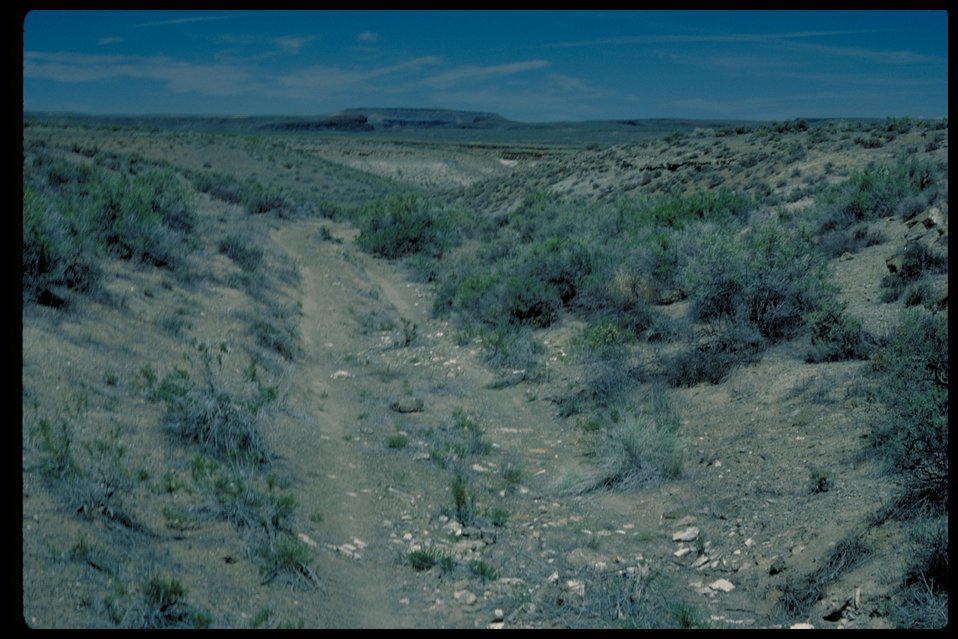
Oregon Trail near Wildhorse Butte Lower Snake River District